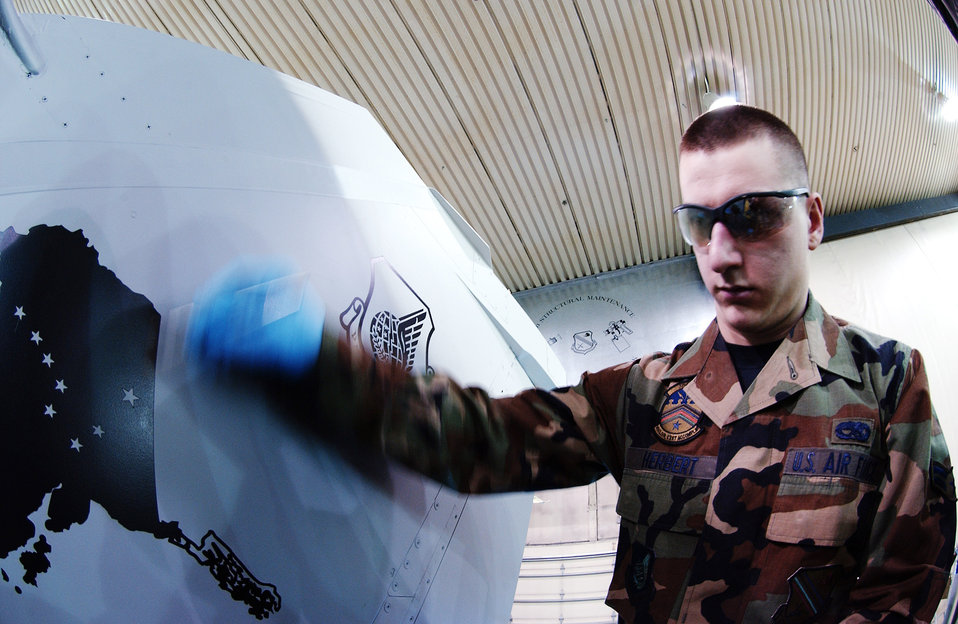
Aggressor fleet paint scheme nears completion

Airman 1st Class Daniel Herbert applies the finishing touches to the state of Alaska stencil design on the tail March 26 at Eielson Air Force Base, Alaska. Airmen in the sheet metal shop work on stenciling the flag ship tail with unique markings setting it apart from other aggressor aircraft from the 18th Aggressor Squadron.